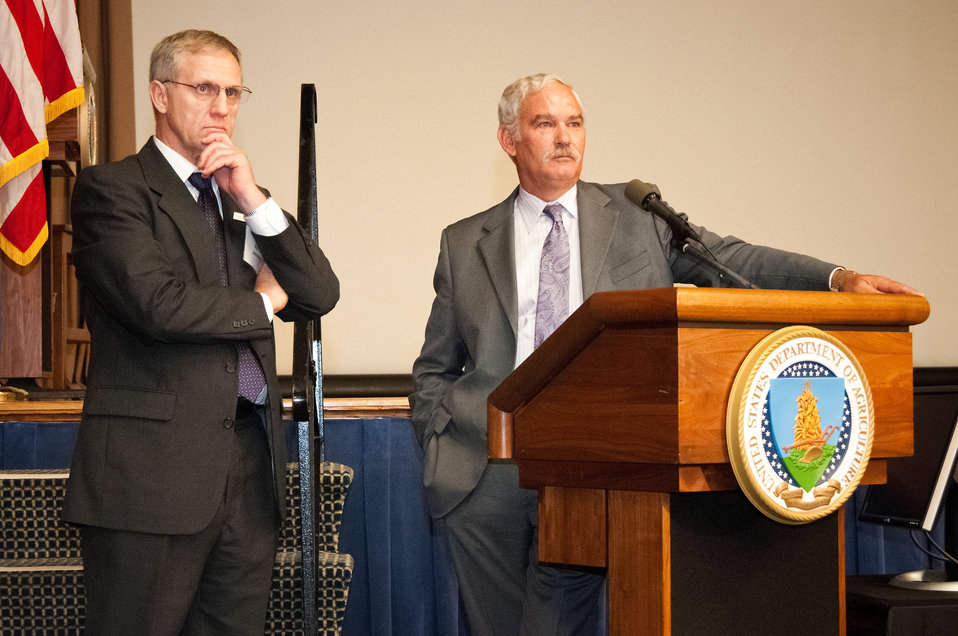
National Farmers Union President Roger Johnson (left) and Agriculture Farm and Foreign Agricultural Services (FFAS) Under Secretary Michael Scuse (right) listen to questions posed by members of the National Farmers Union at the U.S. Department of Agriculture (USDA) in Washington, D.C. on Monday, Sept. 10, 2012. The National Farmers Union was in Washington to discuss the 2012 Farm Bill, economics, exports and rural America.